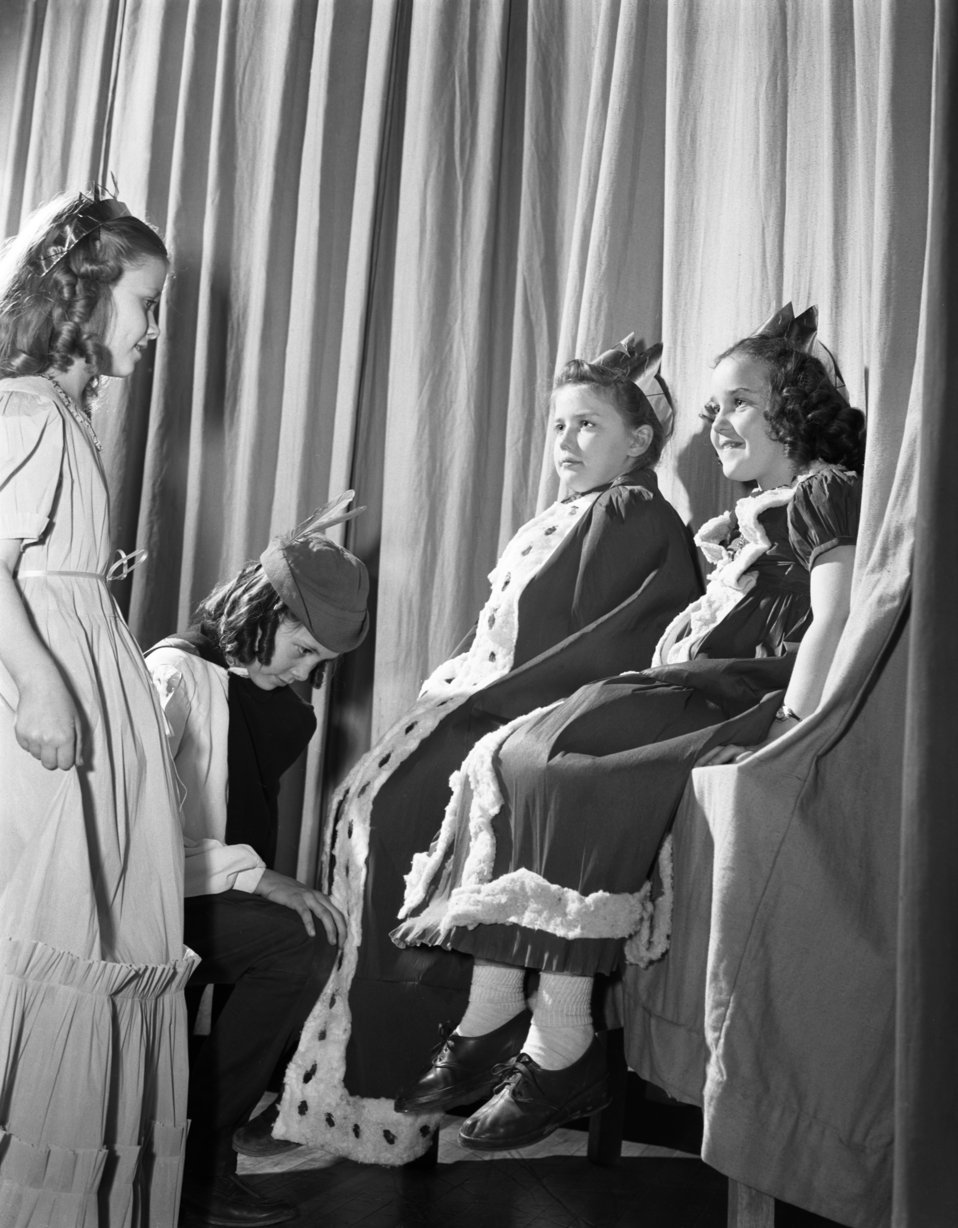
Glennwood School G.S. Play Oak Ridge 1947

3322-2a DOE photo Ed Westcott 2-28-1947 Oak Ridge Tennessee